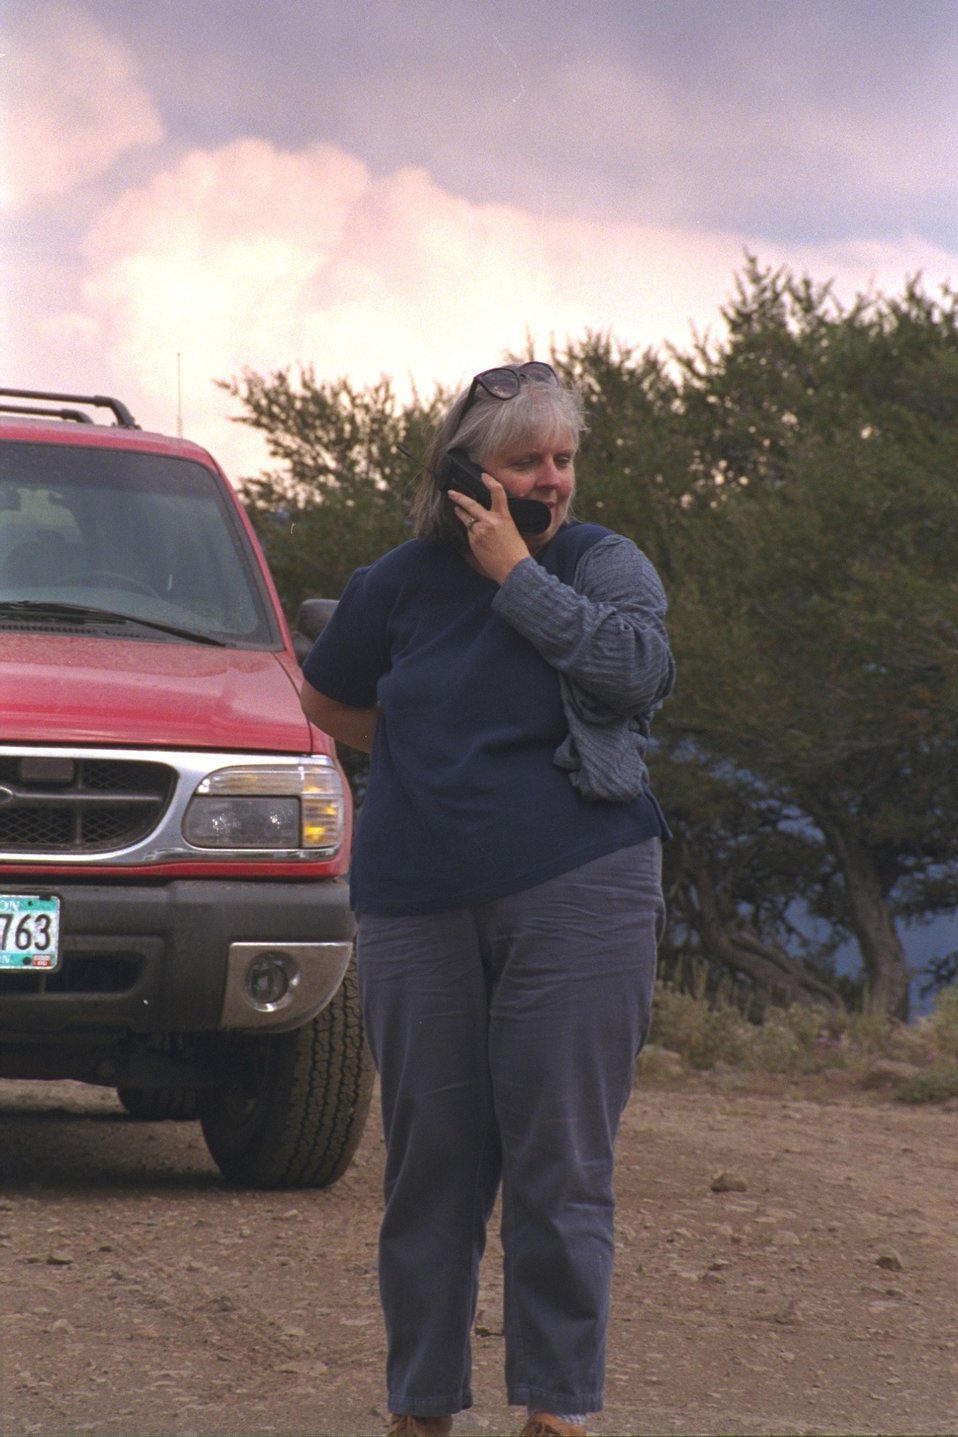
OR/WA BLM State Director Elaine Zielinski takes her cell phone call on Steens Mountain.